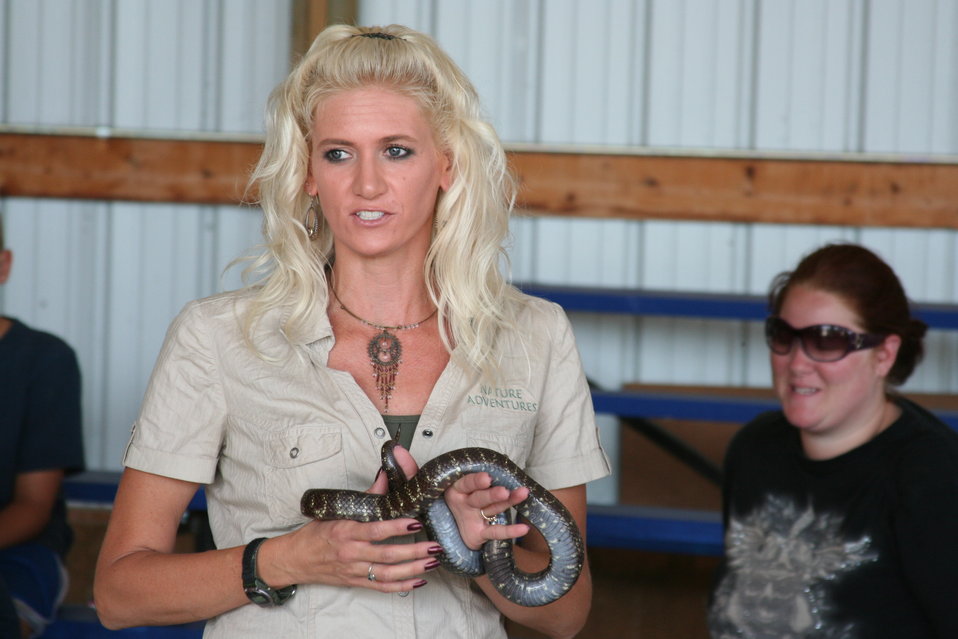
2011 Huron Prairie Fest